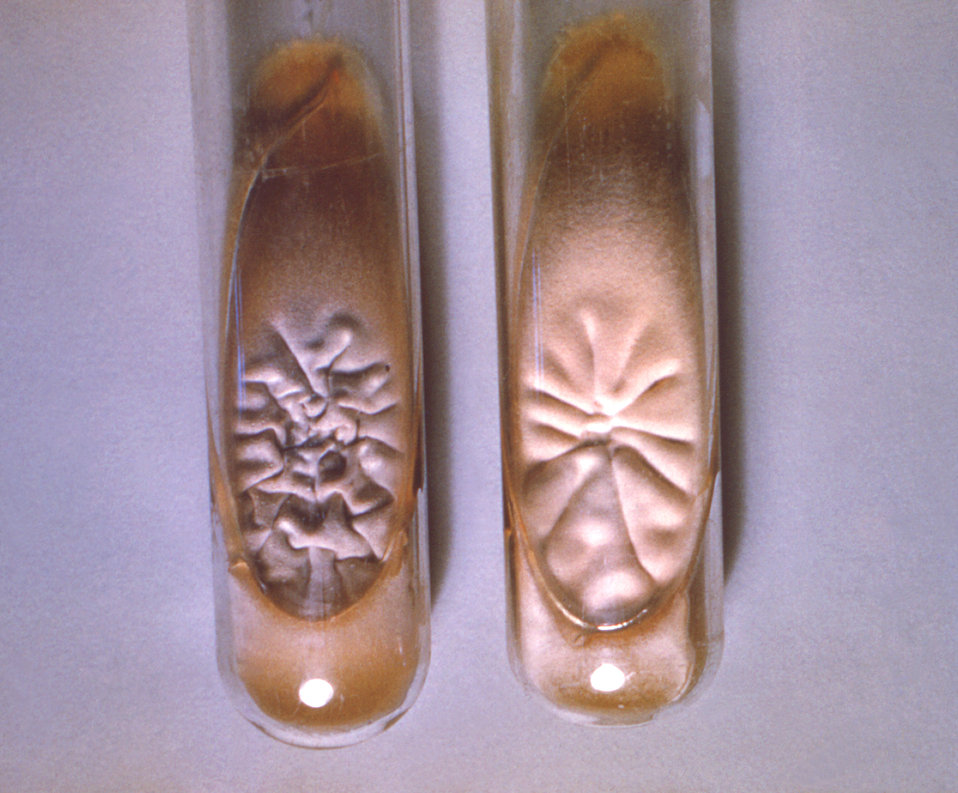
This image depicts two slant culture test tubes, both of which had been inoculated with Trichophyton tonsurans fungal organisms derived from a monospore culture. Of interest, were the differences in colonial morphology from one culture to the next, though the experimental circumstances were identical for both tubes.